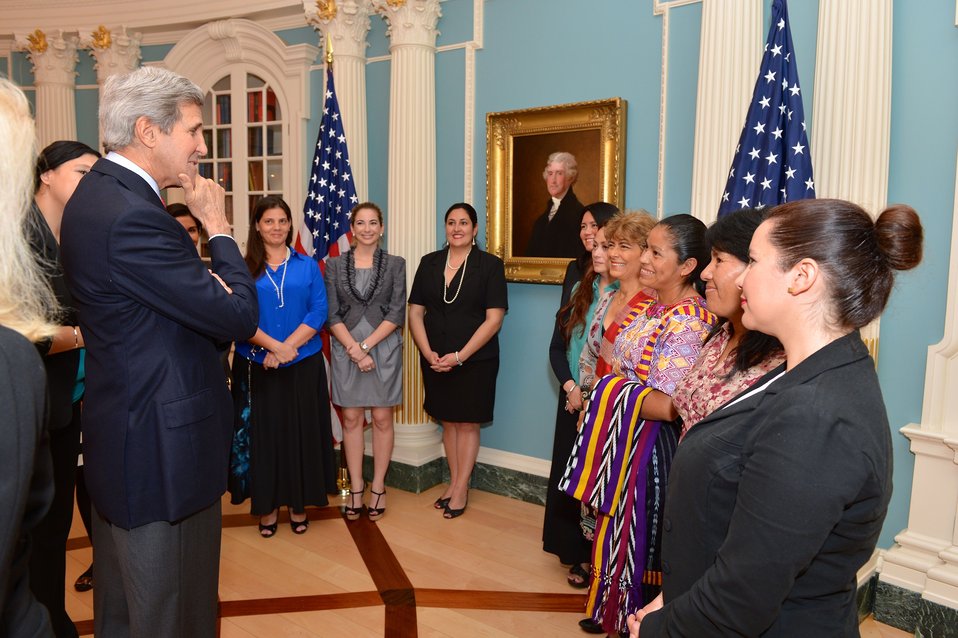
Secretary Kerry Meets With WEAmericas Entrepreneurship Group Participants

U.S. Secretary of State meets with women from the WEAmericas Entrepreneur Group at the U.S. Department of State in Washington, D.C., on May 9, 2014.